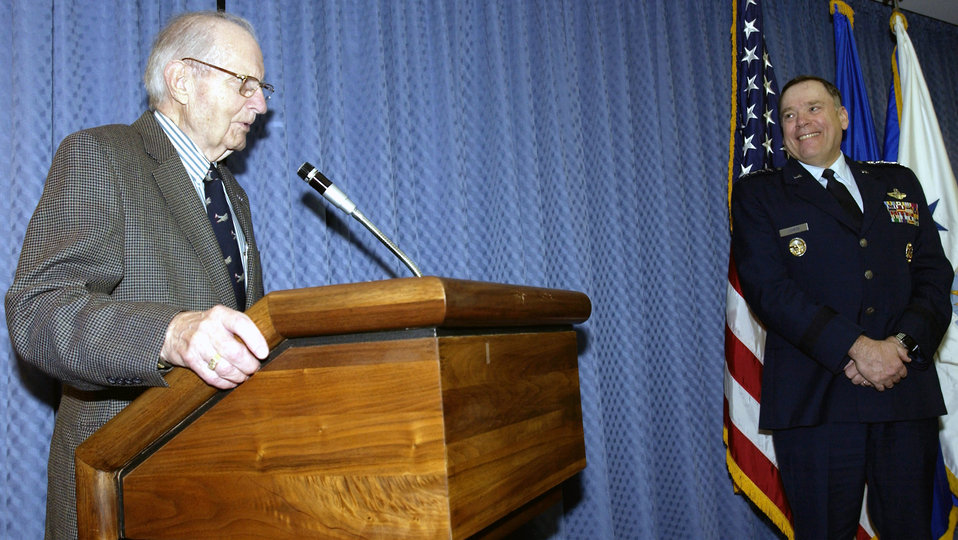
Pretty as a picture

WASHINGTON (AFPN) -- Air Force Chief of Staff Gen. John P. Jumper (right) looks on as retired Air Force Reserve Col. Robert K. Morgan speaks at a ceremony in the Pentagon on Jan. 6. During the ceremony, a painting of the Memphis Belle, a Boeing B-17 Flying Fortress piloted by Morgan, was dedicated to the Air Force Art Program on behalf of the Memphis Belle Memorial Association and the Memphis Belle War Memorial Foundation. The Memphis Belle belonged to the 91st Bombardment Group (Heavy) during World War II and was the first bomber to complete 25 combat missions before returning to the United States.